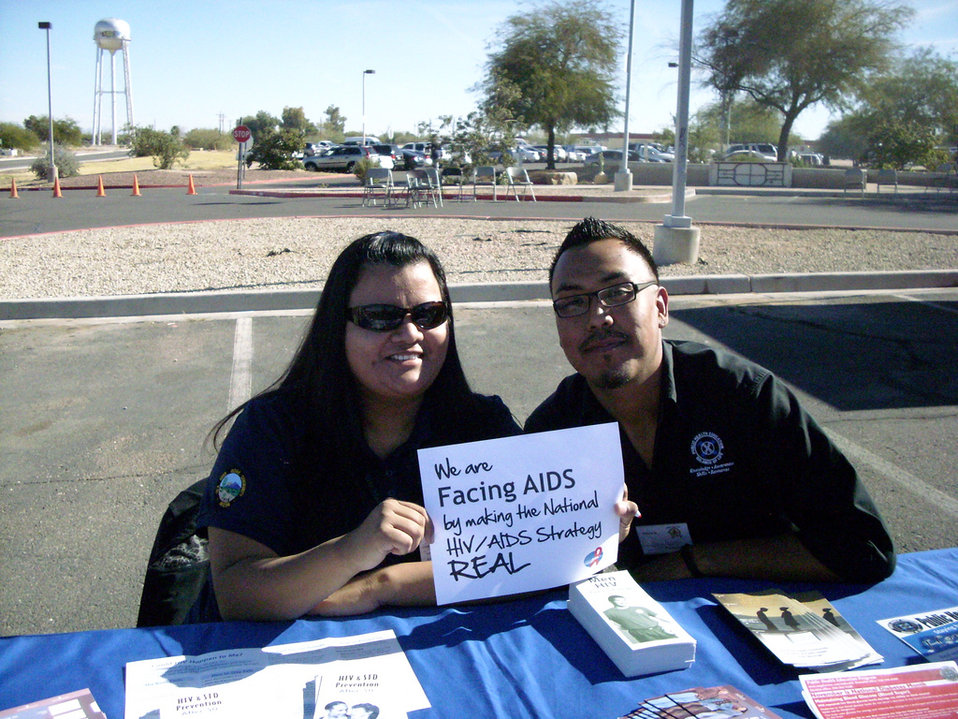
We are Facing AIDS through NHAS-37